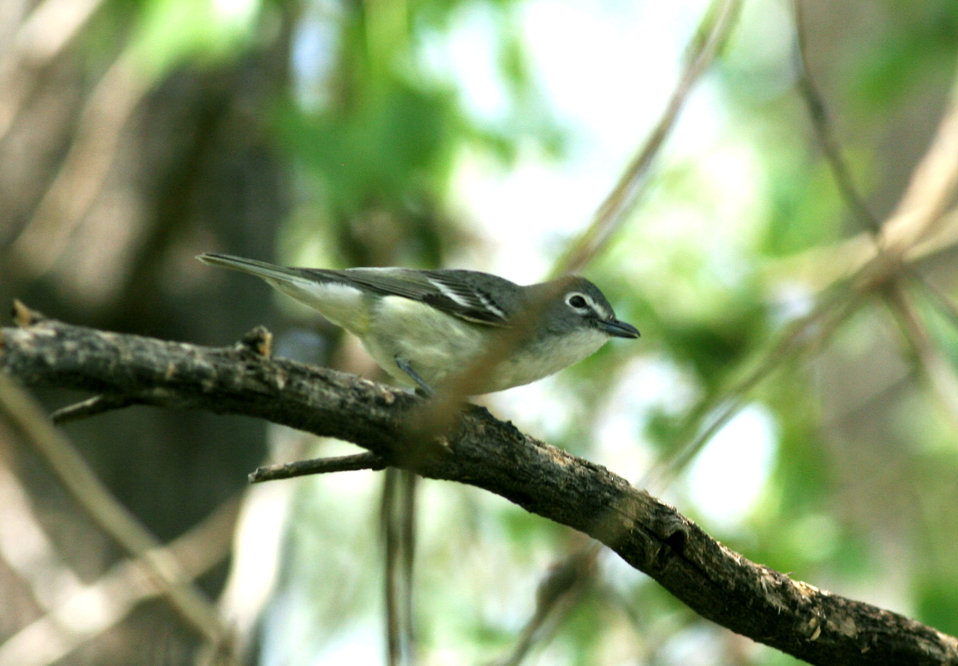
Plumbeous vireo at RMA

Songbirds like this plumbeous vireo are filtering through the cottonwood groves at the Rocky Mountain Arsenal National Wildlife Refuge.